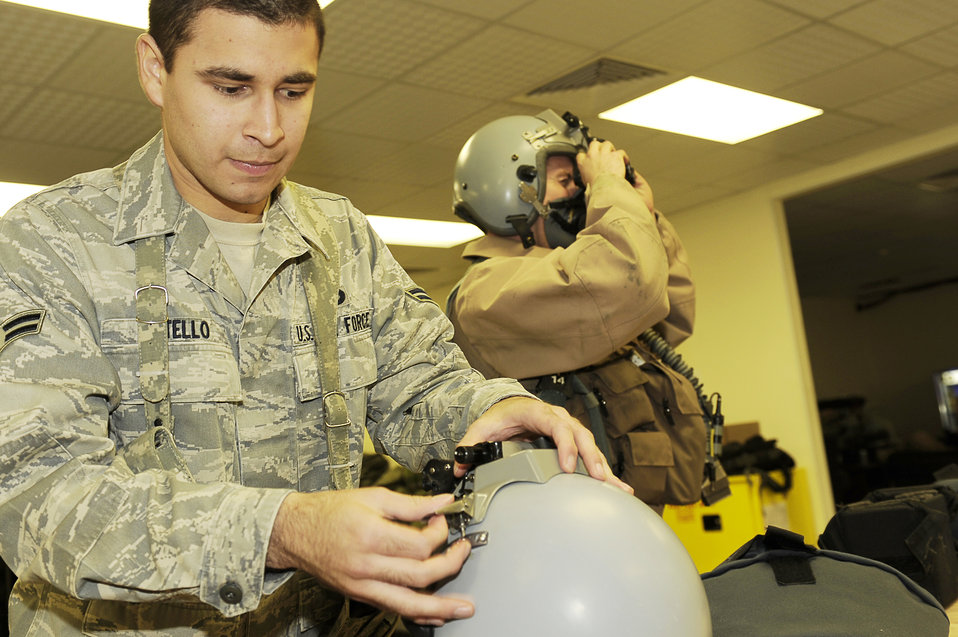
Airmen prepare for night mission at Bagram

Airman 1st Class Jeremy Betello works on a helmet while Capt. Austin Brown, 79th Expeditionary Fighter Squadron, prepares for his flight Jan. 4, 2010. Airman Betello is assigned to the Life Support section for the 455th Expeditionary Operation Support Squadron. Captain Brown is from Fountain Hills, Ariz. Both are stationed at Shaw Air Force Base, S.C.